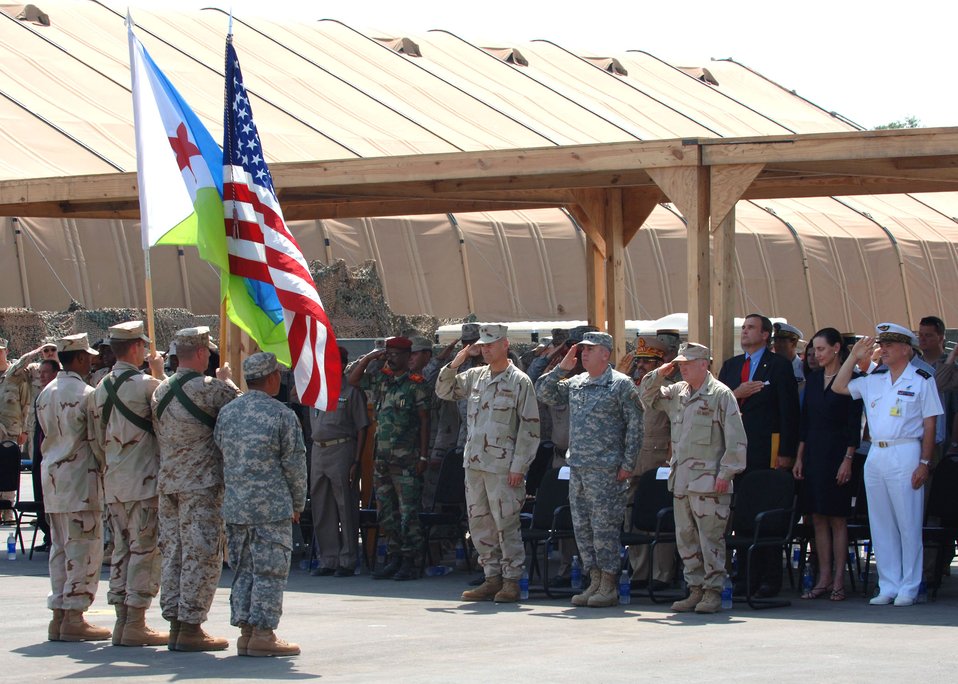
CJTF-HOA Change of Command

Rear Adm. Richard Hunt (from left), Army Gen. John Abizaid and Rear Adm. James Hart salute the colors during the Combined Joint Task Force - Horn of Africa change-of-command ceremony Feb. 14 at Camp Lemonier, Djibouti. General Abizaid officiated as Admiral Hunt passed command of the task force to Admiral Hart.